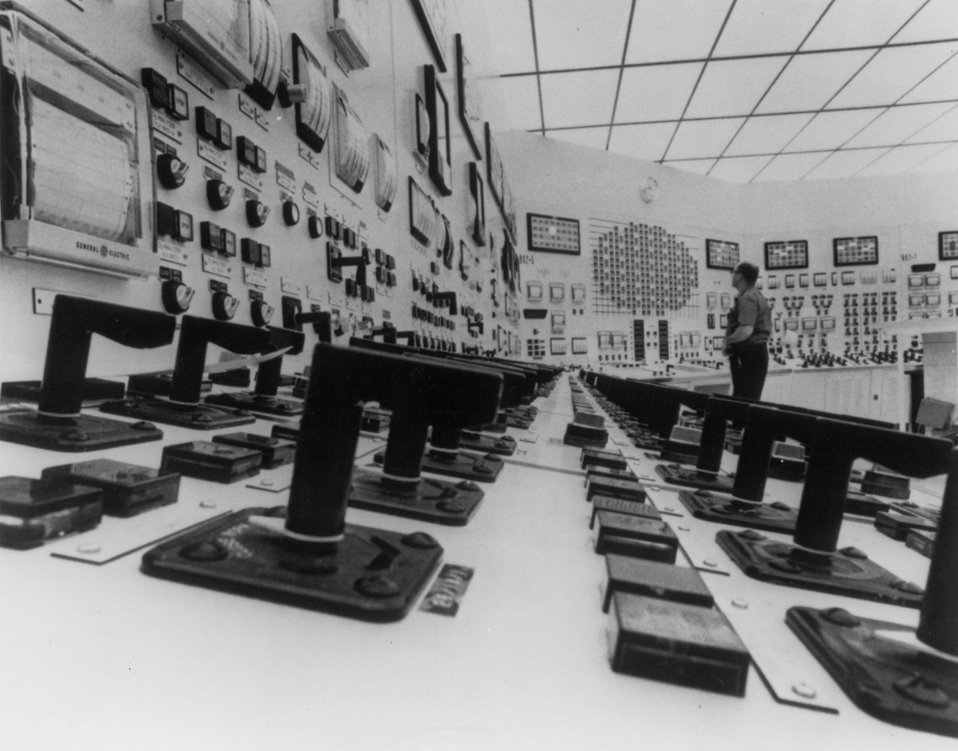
Central Control room of Quad-Cities nuclear power plant at Cordova, Illinois.